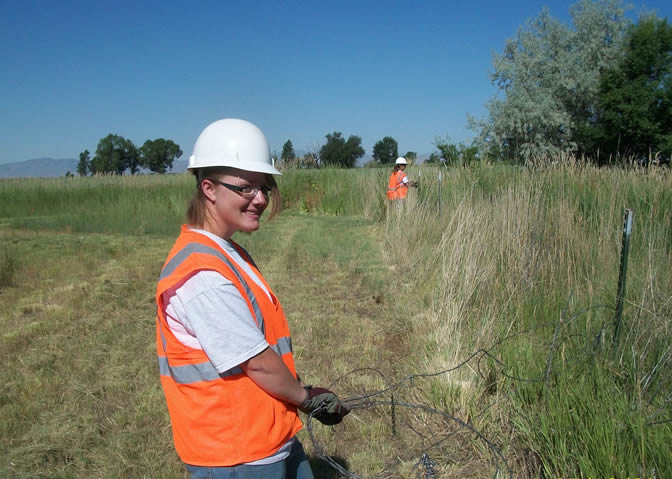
Barbed Wire Removal

Youth Conservation Corp participant removes a barbed wire fence from the Bear River Migratory Bird Refuge.